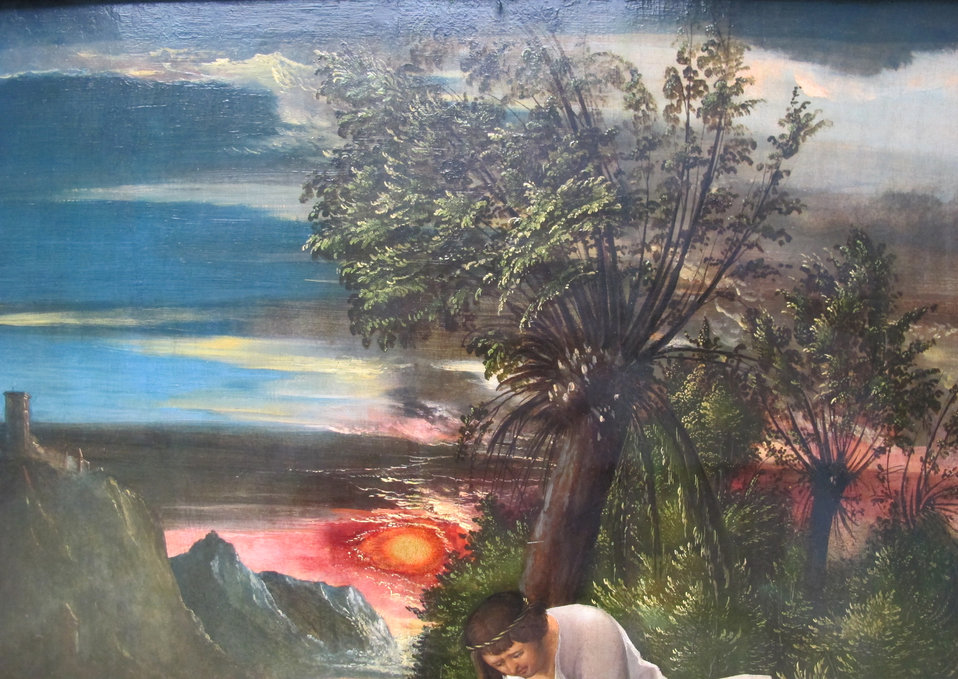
Albrecht altdorfer, ritrovamento del corpo di san floriano, 1520 ca, 04